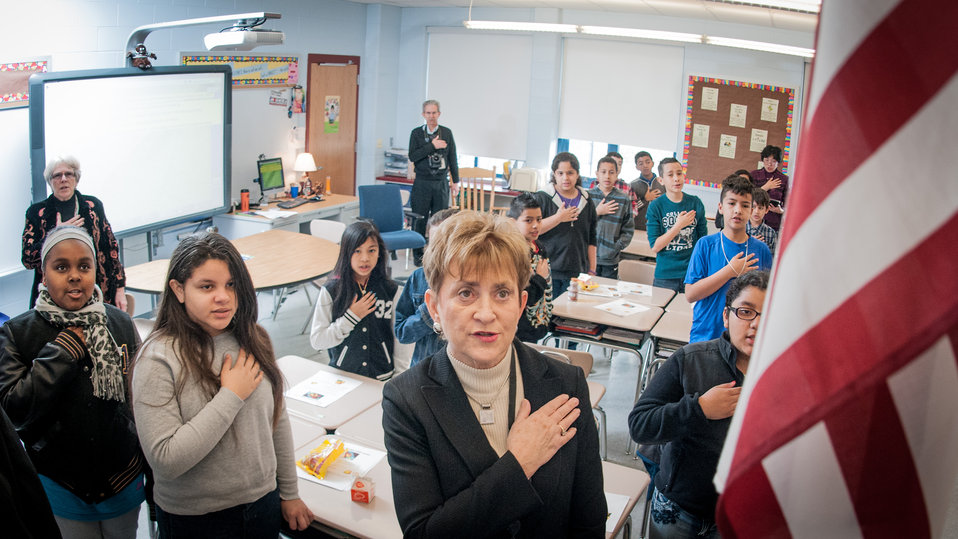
Department of Agriculture (USDA) Food, Nutrition and Consumer Services Deputy Under Secretary Dr. Janey Thornton, center, Principal Robin Weaver, left, and Mr Grasso's 5th grade class participates in the Pledge of Allegiance before the start of the inaugural International School Meals Day at Harmony Hills Elementary School in Silver Spring, MD, on Friday, March 8, 2013, in Silver Spring, VA. Mr. Damian Grasso's 5th grade class was paired with Mrs. Karen McAllister’s class at Dalry Primary School in Edinburgh, North Ayrshire, Scotland, United Kingdom. Using a real-time online video website service, the children shared some of the healthy eating and physical activity choices available to them. The Dalry fitness program includes Zumba classes, and Harmony Hills has a Fitness Club. Both schools have soccer programs. The Harmony Hills 5th grade students shared their thoughts about their healthy menu items, mango, kiwi, and hummus. To honor the Maryland students, the Dalry students were treated to a Southern Maryland dessert, Smith Island cake (made with 7 thin layers). “This event helps underscore the importance of the HealthierUS School Challenge and some of the ways that children and communities can become involved with promoting nutrition,” said Dr. Thornton. “USDA believes that schools can take a leadership role in combating childhood obesity by incorporating healthier menus and introducing more physical activities during the school day. The strong foundation these schools have built supports a clear path for our nation's young people to win the future.'